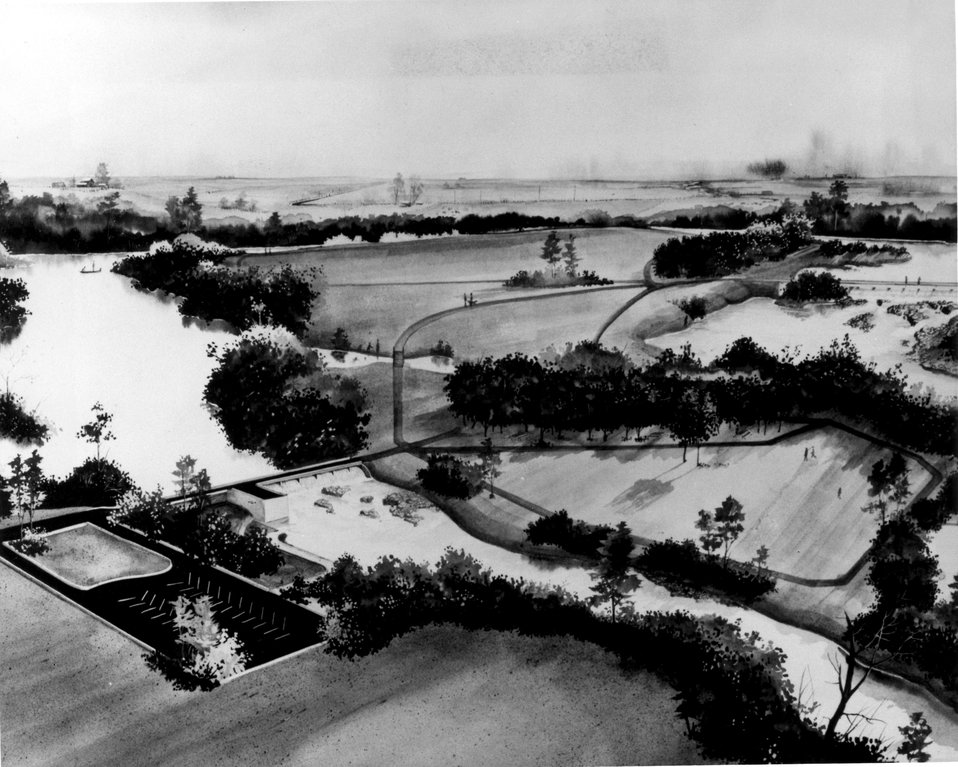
This artist's concept shows the proposed low-head hydropower installation of a modern 7.2 MW bulb turbine at the existing upper dam site on the Snake River, Idaho Falls, Idaho. c. 1978